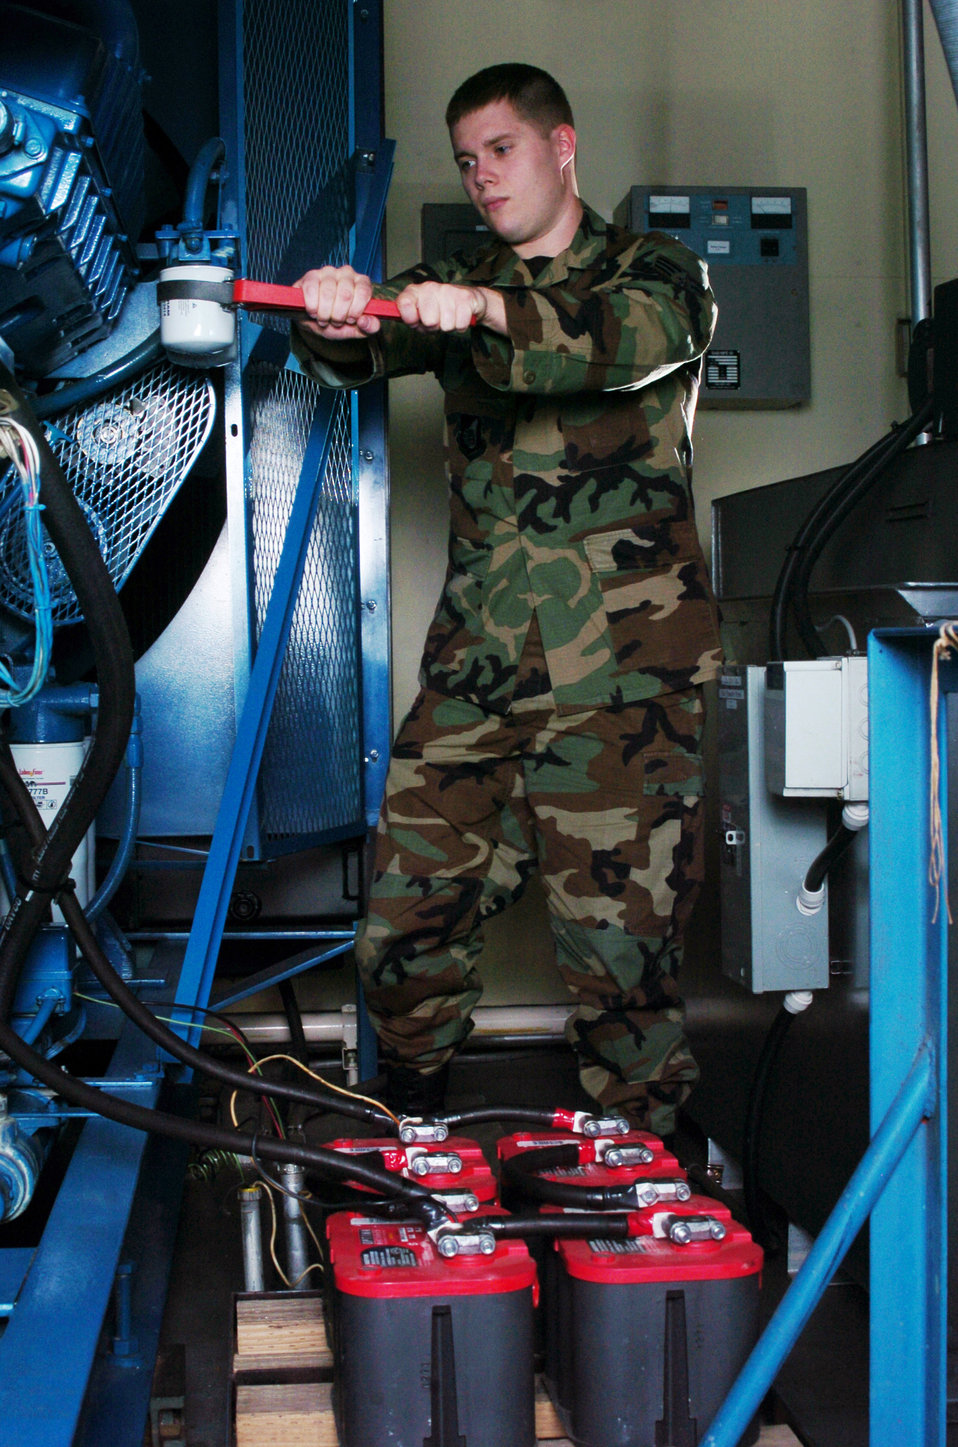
Power pro

CAMP ZAMA, Japan -- Senior Airman Steve Boyer uses a wrench to tighten a filter on an emergency generator here Oct. 28. The power production Airmen maintain emergency power generators and power distribution systems for the satellite communications and system control facilities. Airman Boyer is an electrical power production technician assigned to the 374th Communication Squadron.